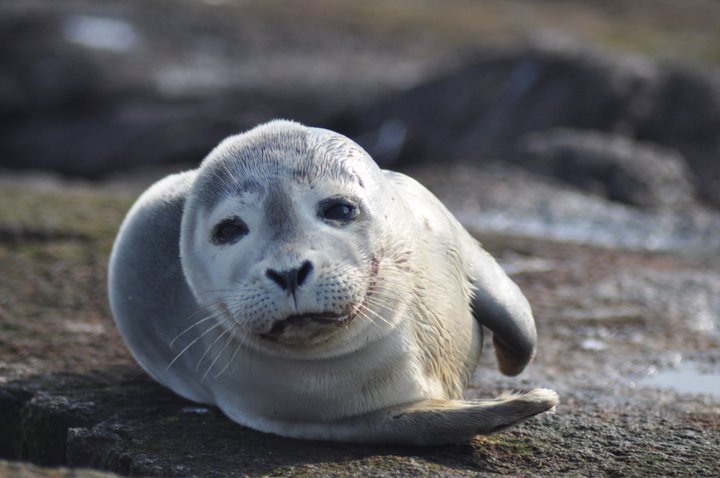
Photo of the Week - Harbor seal at Nantucket National Wildlife Refuge, MA

Photo of the Week - 07/22/2011

Harbor seal at Nantucket National Wildlife Refuge in Massachusetts.